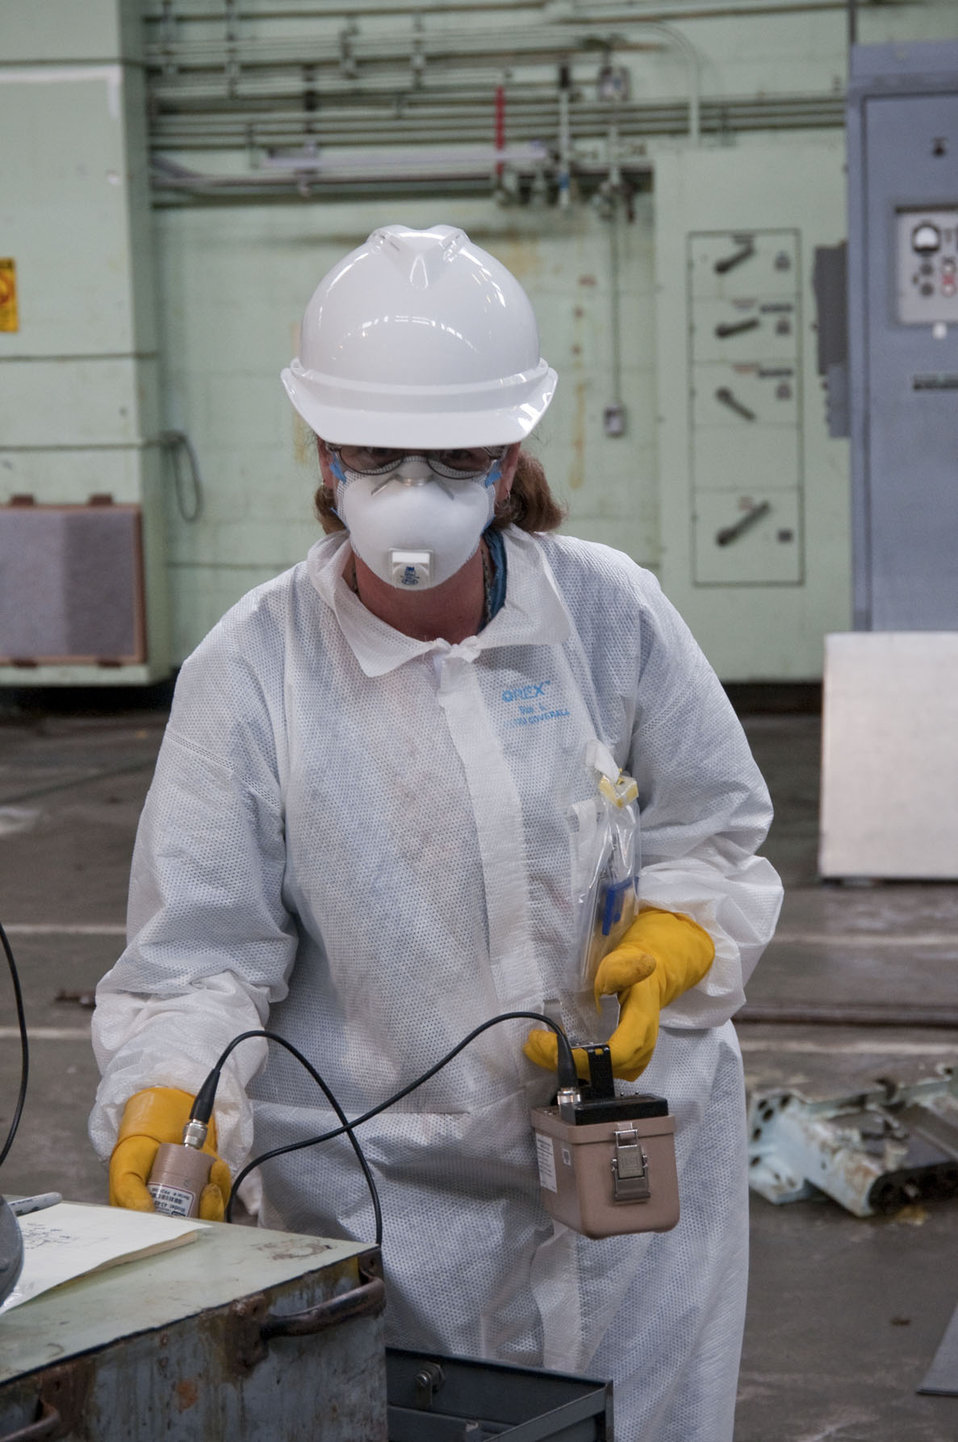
Skilled Workers Bruised by Recession Find New Start in Oak Ridge Recovery Act Work

Efforts to clean up waste from the Manhattan Project and the Cold War are under way at the Y-12 National Security Complex. The seven projects there funded by $216 million from the Recovery Act are providing work for more than 1,500 Americans, many of whom had struggled in the recent recession.

In addition to the work at Alpha 5 and Beta 4, Recovery Act projects at Y-12 include the West End Mercury Area storm sewer cleanup project, removal of soil contaminated with mercury, and the cleanup of a 7-acre scrap yard. In January 2011, Recovery Act workers completed the demolition of Building 9211 at Y-12, which reduced the footprint of the Cold War legacy by more than 83,000 square feet.